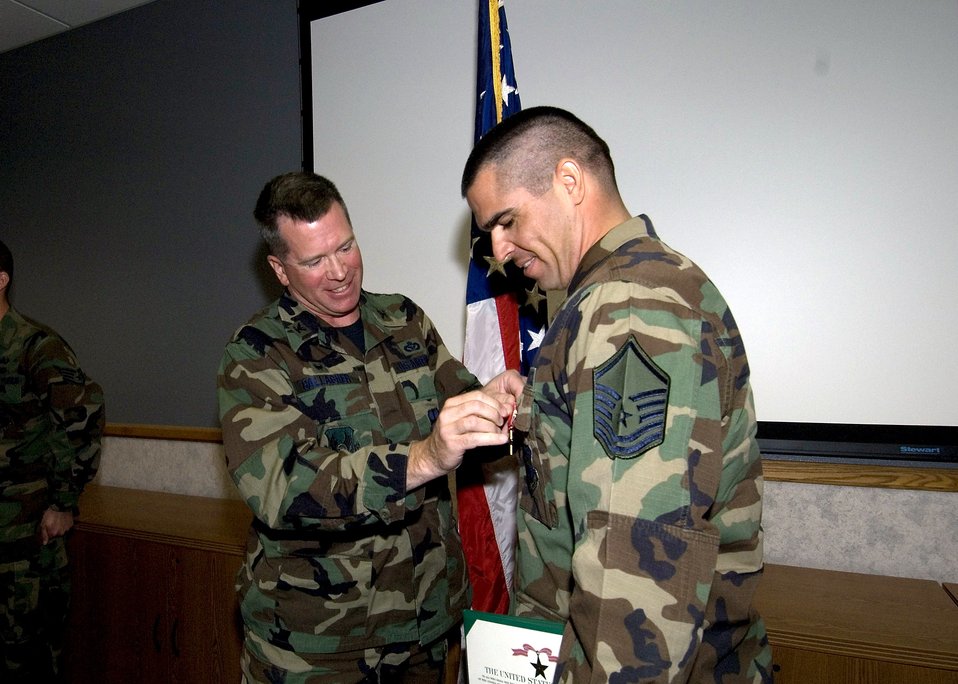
EOD sergeant receives Bronze Star Medal

Col. Bryan Gallagher (left), 95th Air Base Wing commander, pins the Bronze Star Medal to Master Sgt. David Larriva. Sergeant Larriva received the award for his efforts during a deployment in support of Operation Iraqi Freedom.